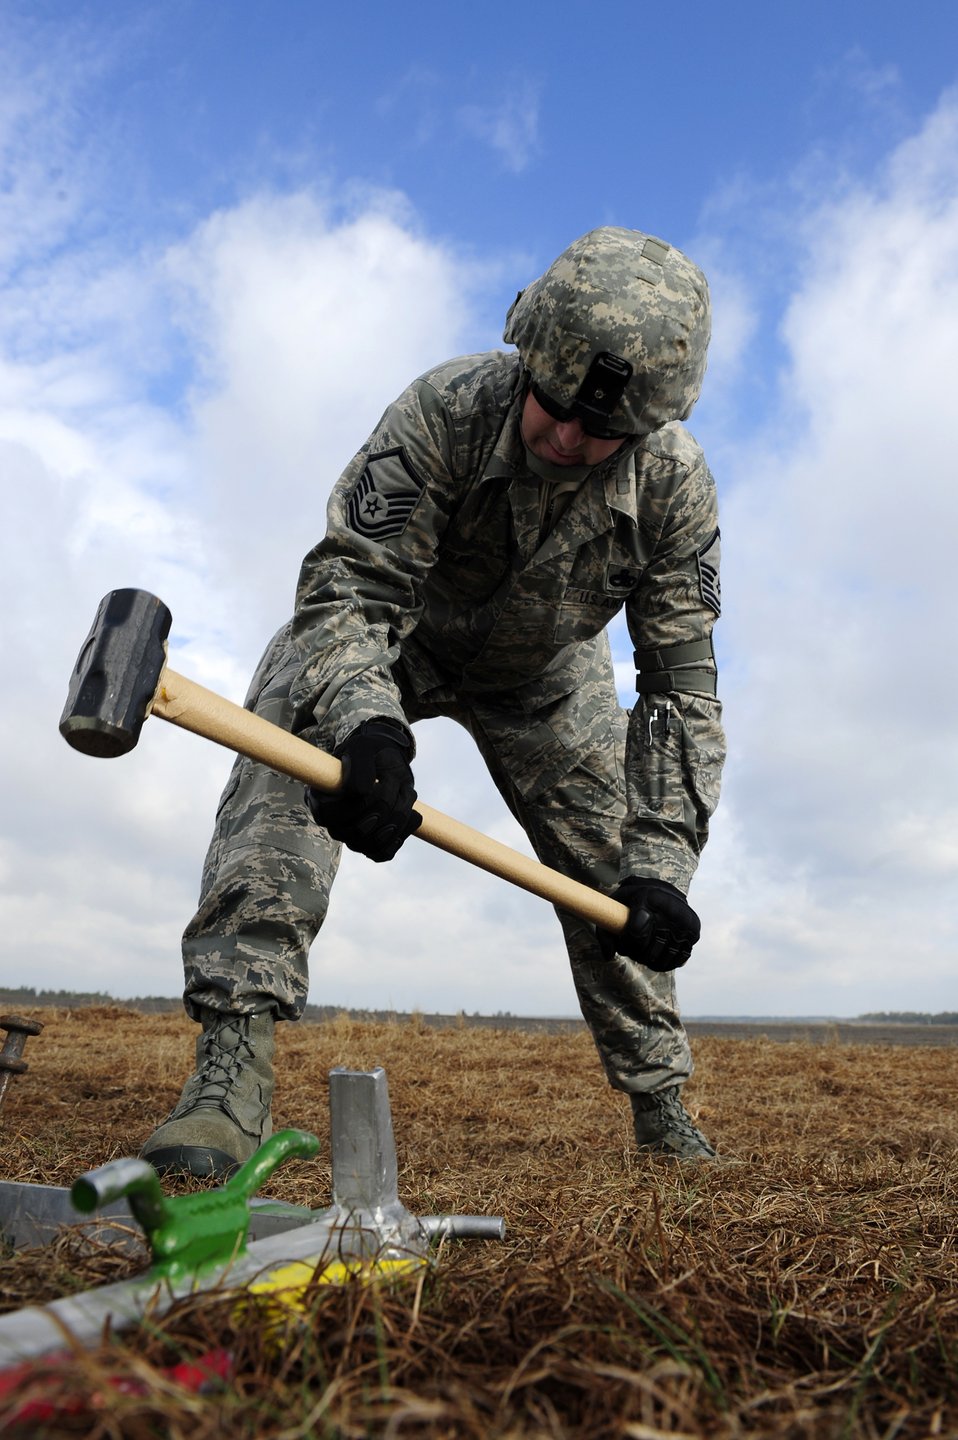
From the ground up

Master Sgt. Jason Dudley sets up a temporary structure for an austere air base during a joint operational access exercise Feb. 10, 2011, near Fayetteville, N.C. Sergeant Dudley is assigned to the 570th Global Mobility Readiness Squadron.